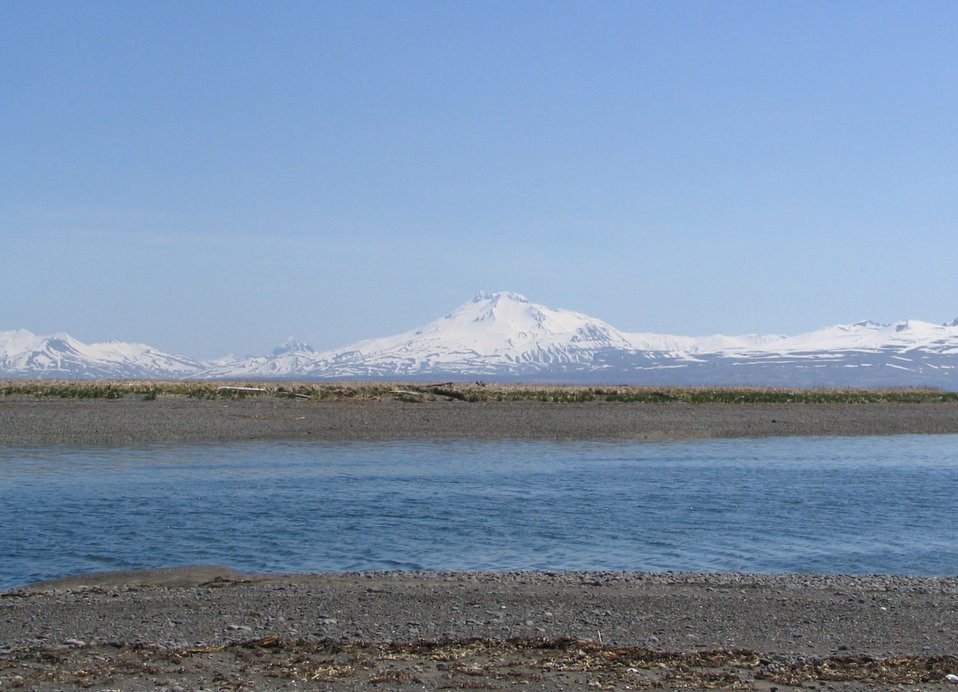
2006-05-28 view from Kinzarof Sowl (3)

Kinzarof Lagoon, Izembek National Wildlife Refuge